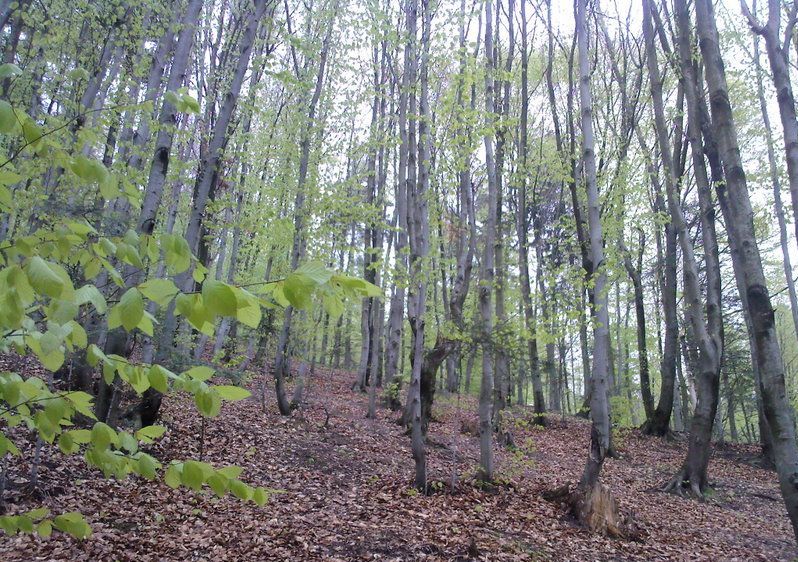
Română: Munţii Meseş ,Măgura Priei,judeţul Sălaj